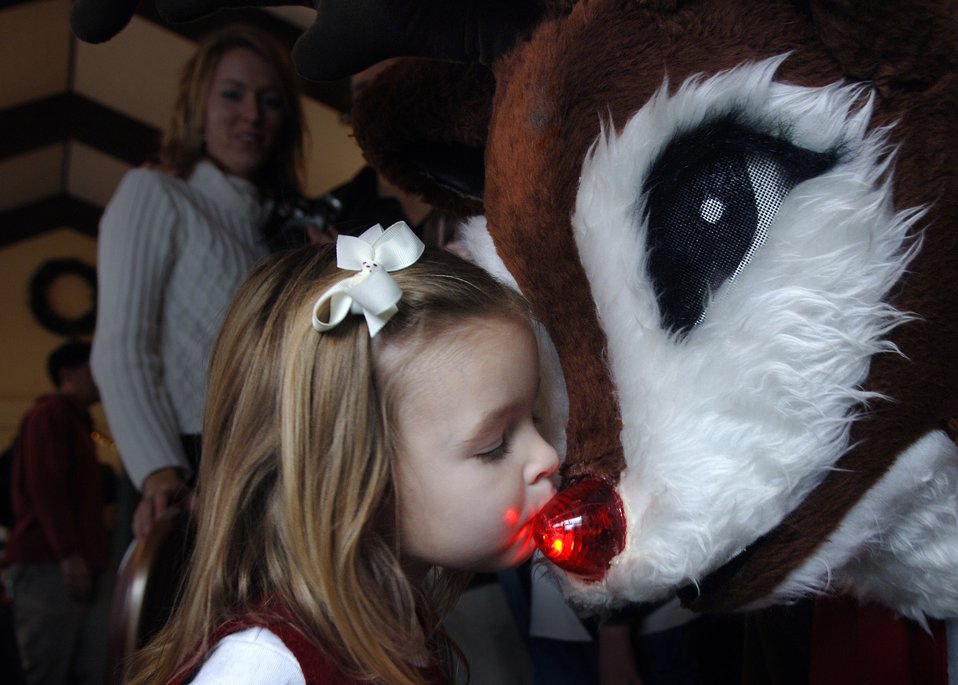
Santa brings holiday cheer to Arnold party

Olivia Wilson, 3, plants a kiss on